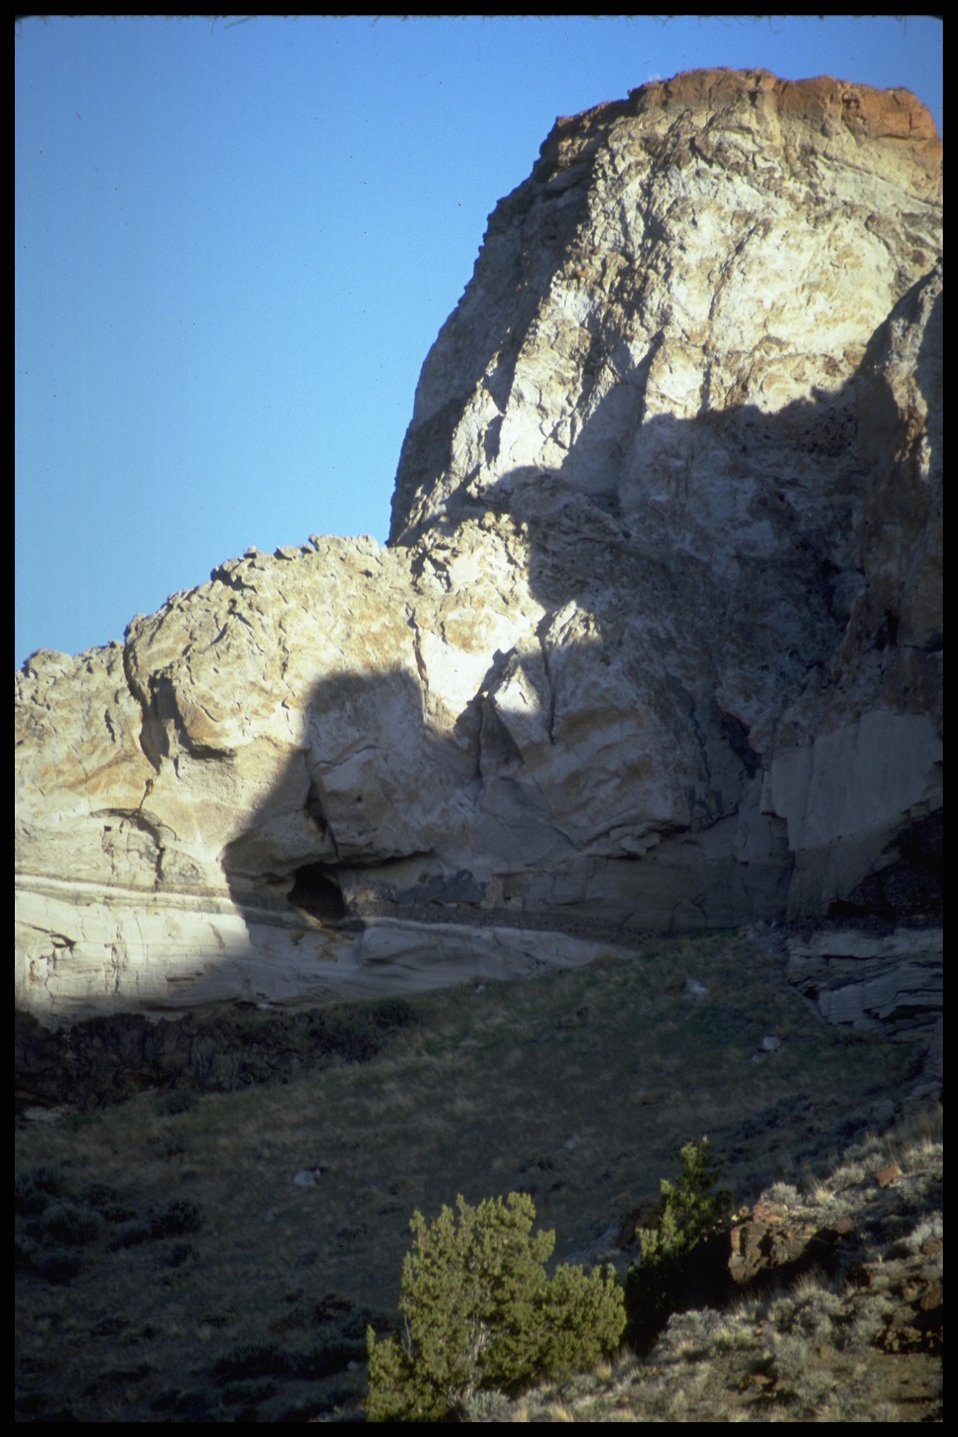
Greaser Canyon, Lakeview District.